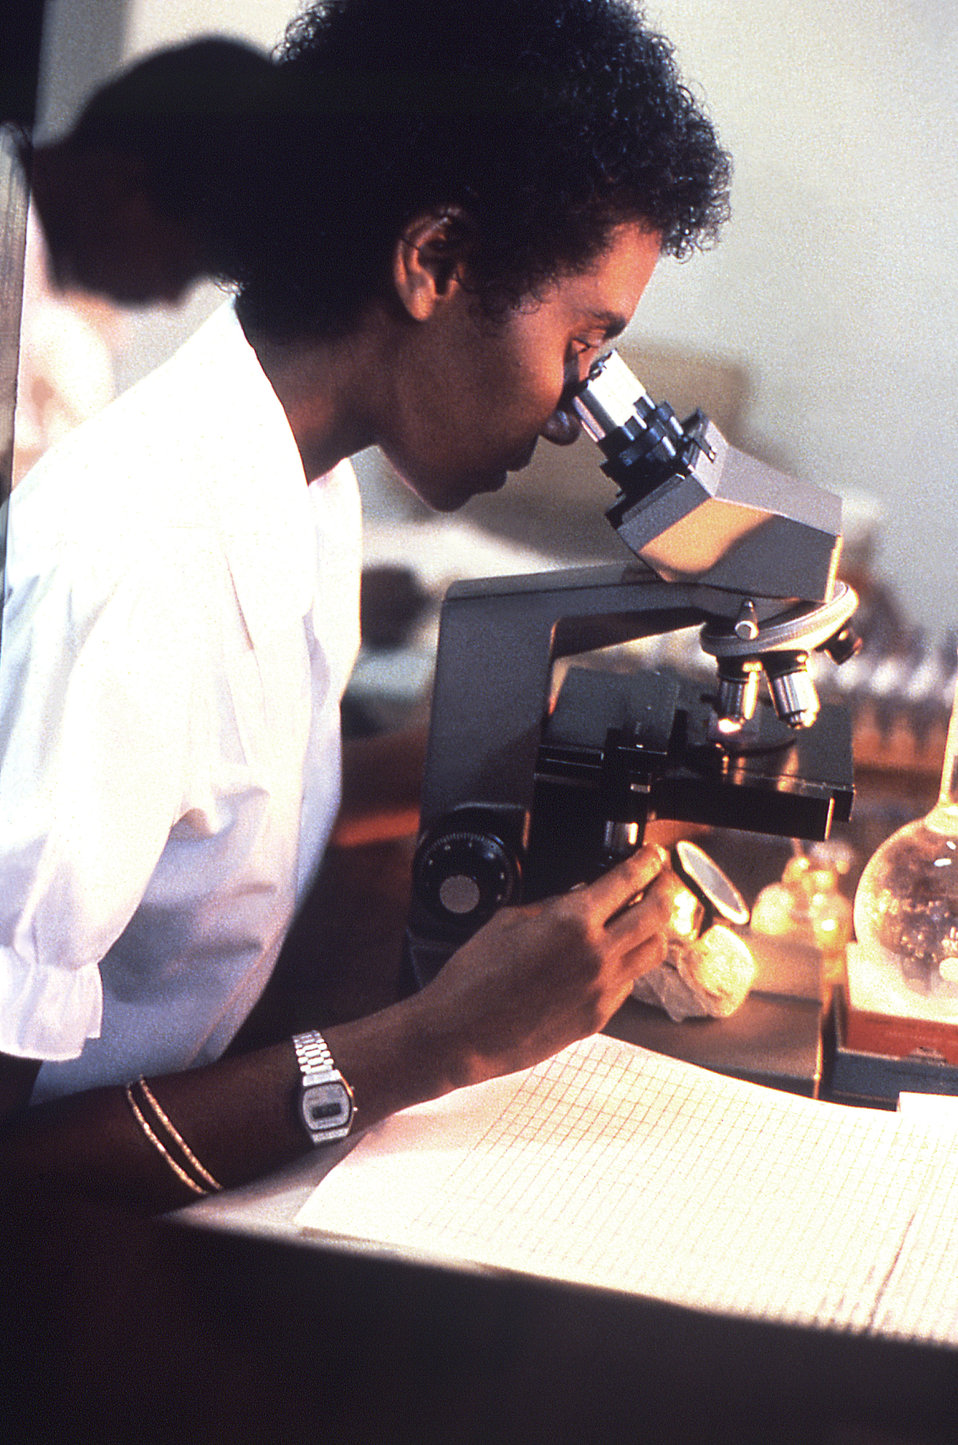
This laboratorian was conducting polio-related research, using a microscope during her investigation.